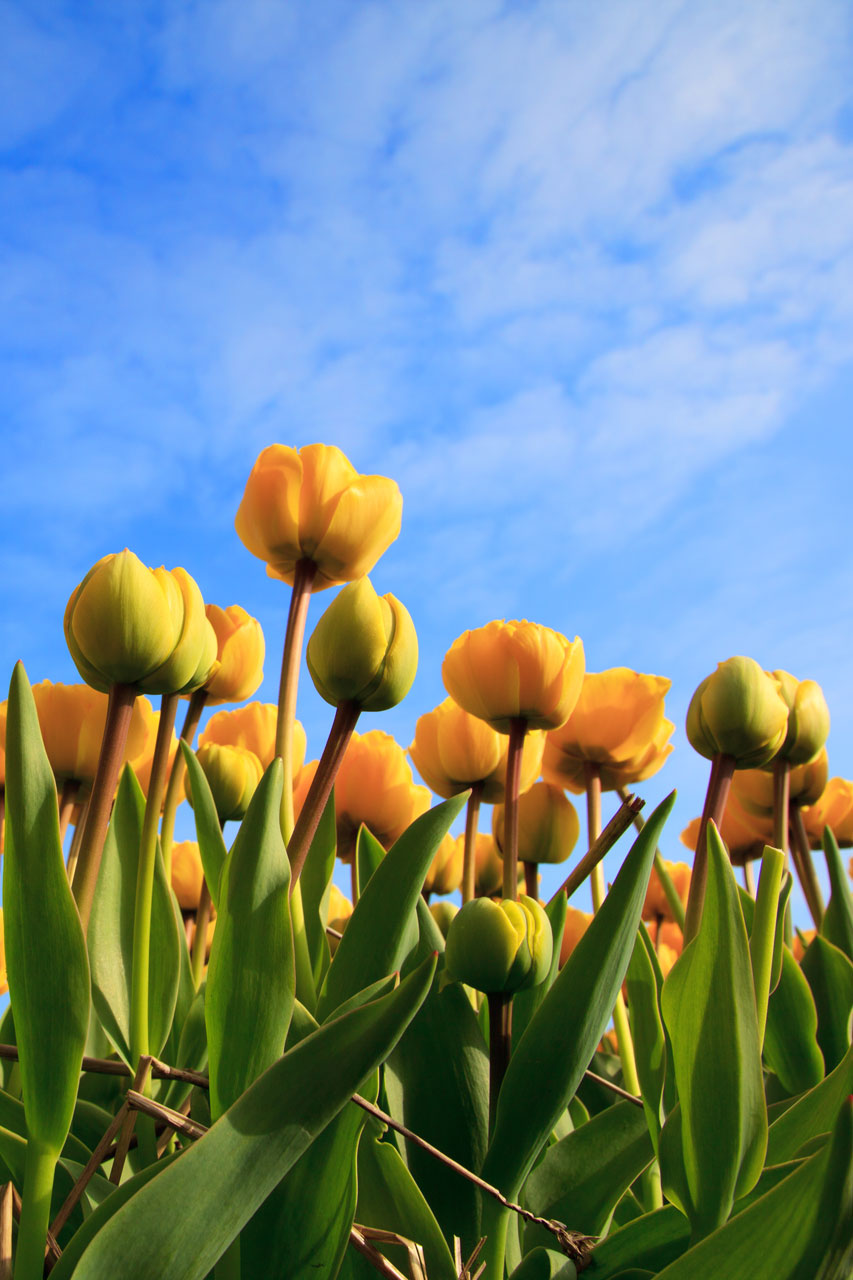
Yellow tulips and sky

Yellow tulips agains blue sky.